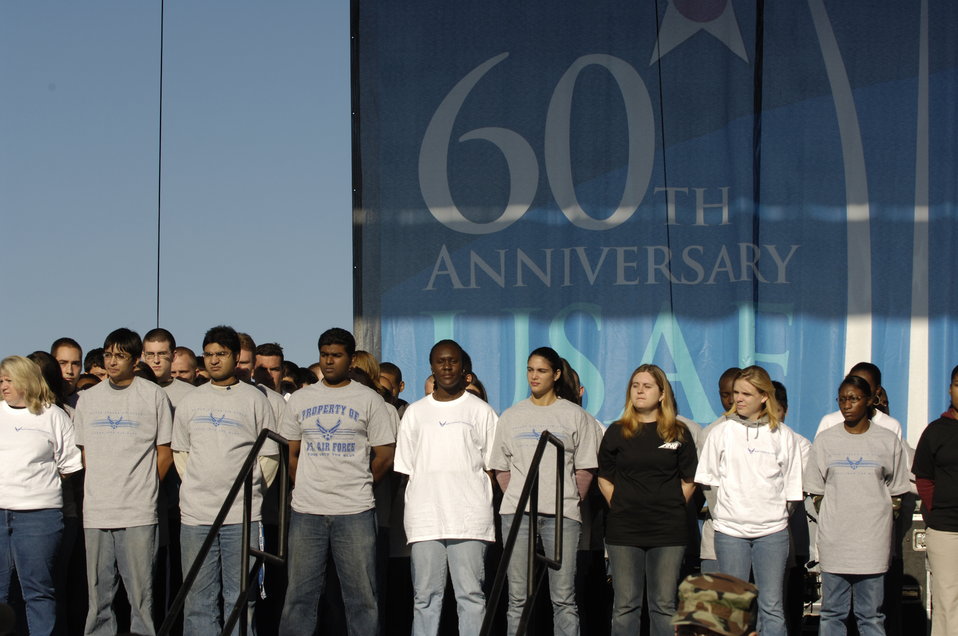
Induction ceremony at Air Force Memorial

Ninety young men and women wait to become inducted as the newest members of U.S. Air Force by Air Force Chief of Staff Gen. T. Michael Moseley on Saturday, Oct. 14, 2006. The induction ceremony was conducted during open house activities at the Pentagon prior to the official dedication ceremony of the Air Force Memorial. President George W. Bush will join Senior Defense Dept. and Air Force officials in a ceremony to present the memorial to the Nation. Desiged by the late James Ingo Freed the memorial with its three soaring spires inspired by the U.S. Air Force Thunderbirds bomb burst manuever, pays tribute to and honors the patriotic men and women of the U.S. Air Force and its predeccessor organizations. An open house will run near the Pentagon in conjunction with the dedication ceremony which will feature performances by the U.S. Air Force Band, the U.S. Air Force Honor Guard drill team, and will culminate with a concert featuring country music performer LeeAnn Womack.